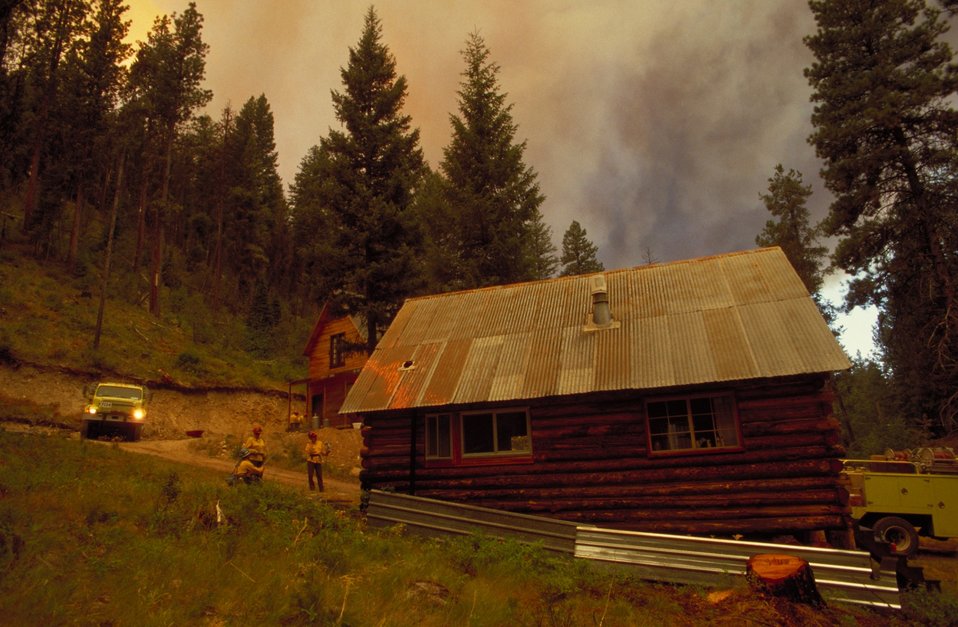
Urban interface Fire Season 2000 Lower Snake River District LSRD